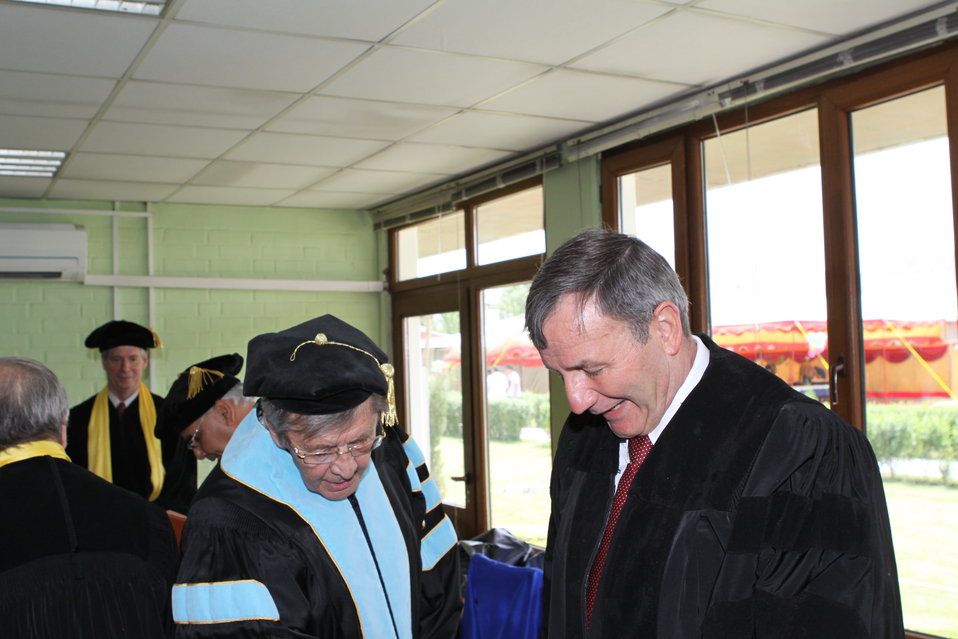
100526 AUAF Graduation 047